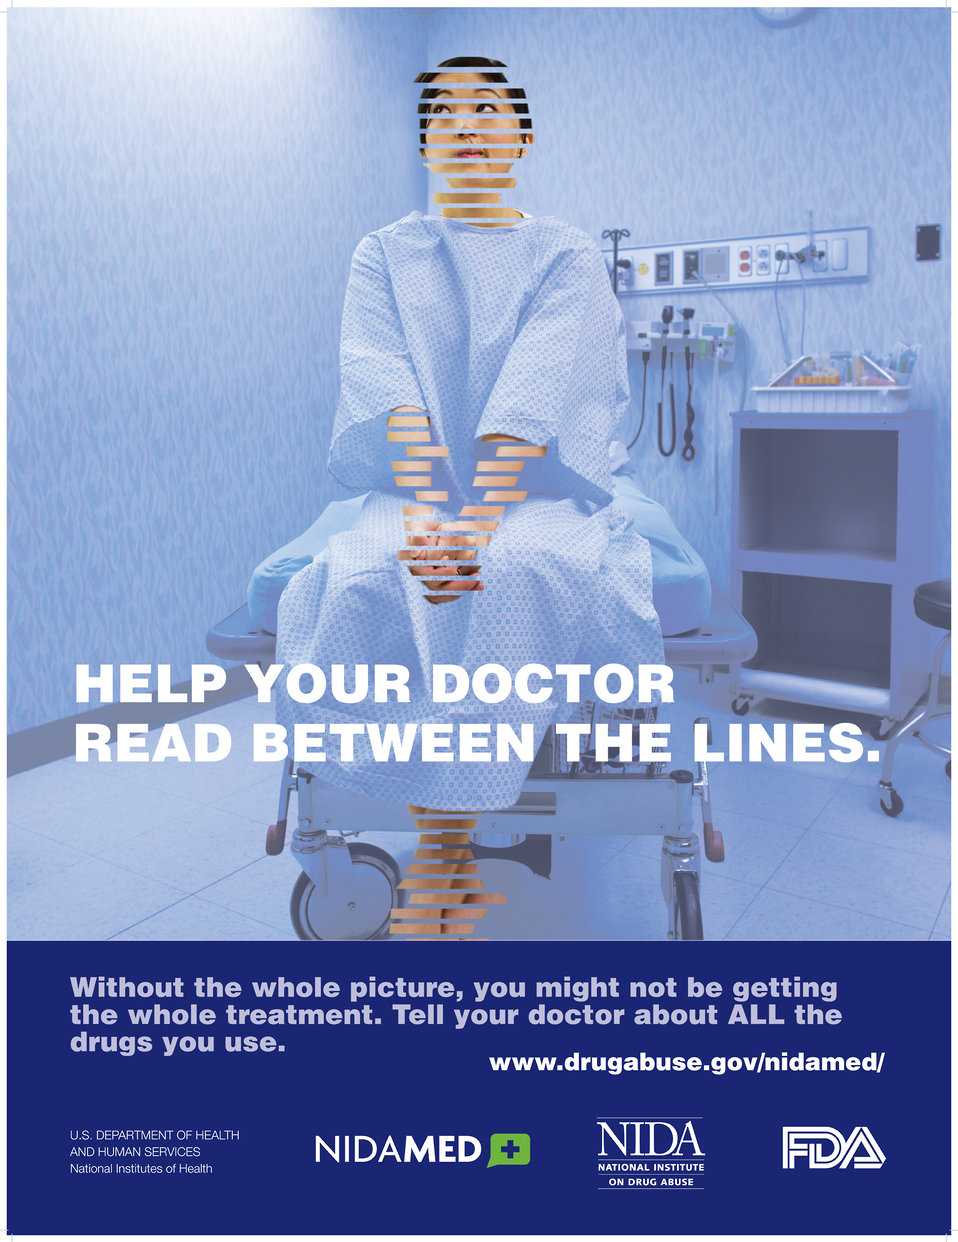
NIDAMED poster